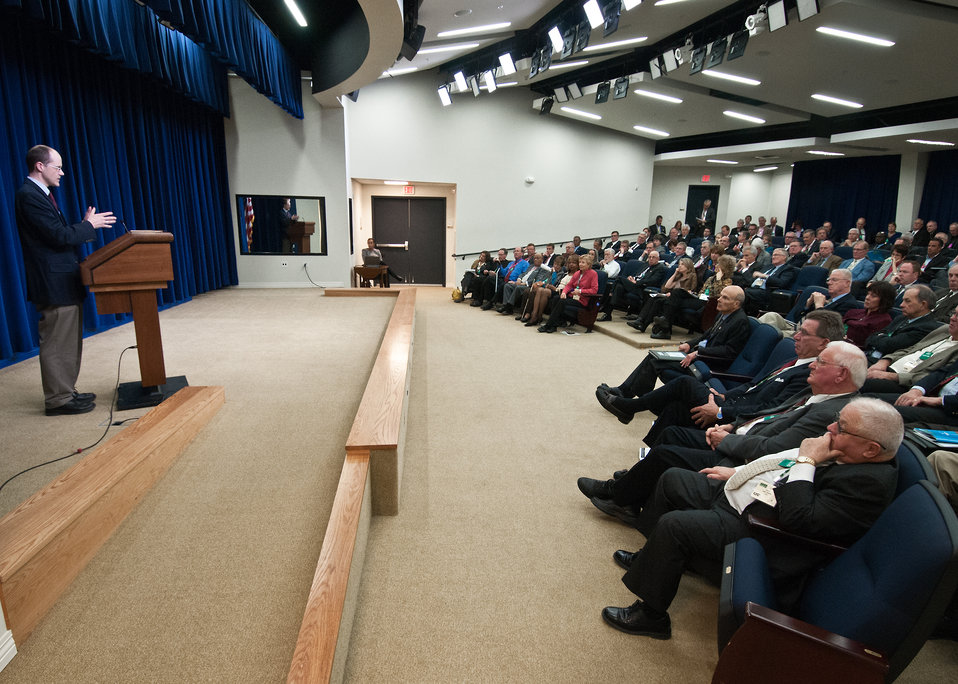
Doug O’Brien, Deputy Undersecretary, Rural Development explained the scope of the United States Department of Agriculture Rural Development and its benefits to rural business, housing and utilities at the 11th Annual Meeting of State Agriculture and Rural Leaders at the Eisenhower Executive Office Building in Washington, D.C., on Friday, January 6, 2012.